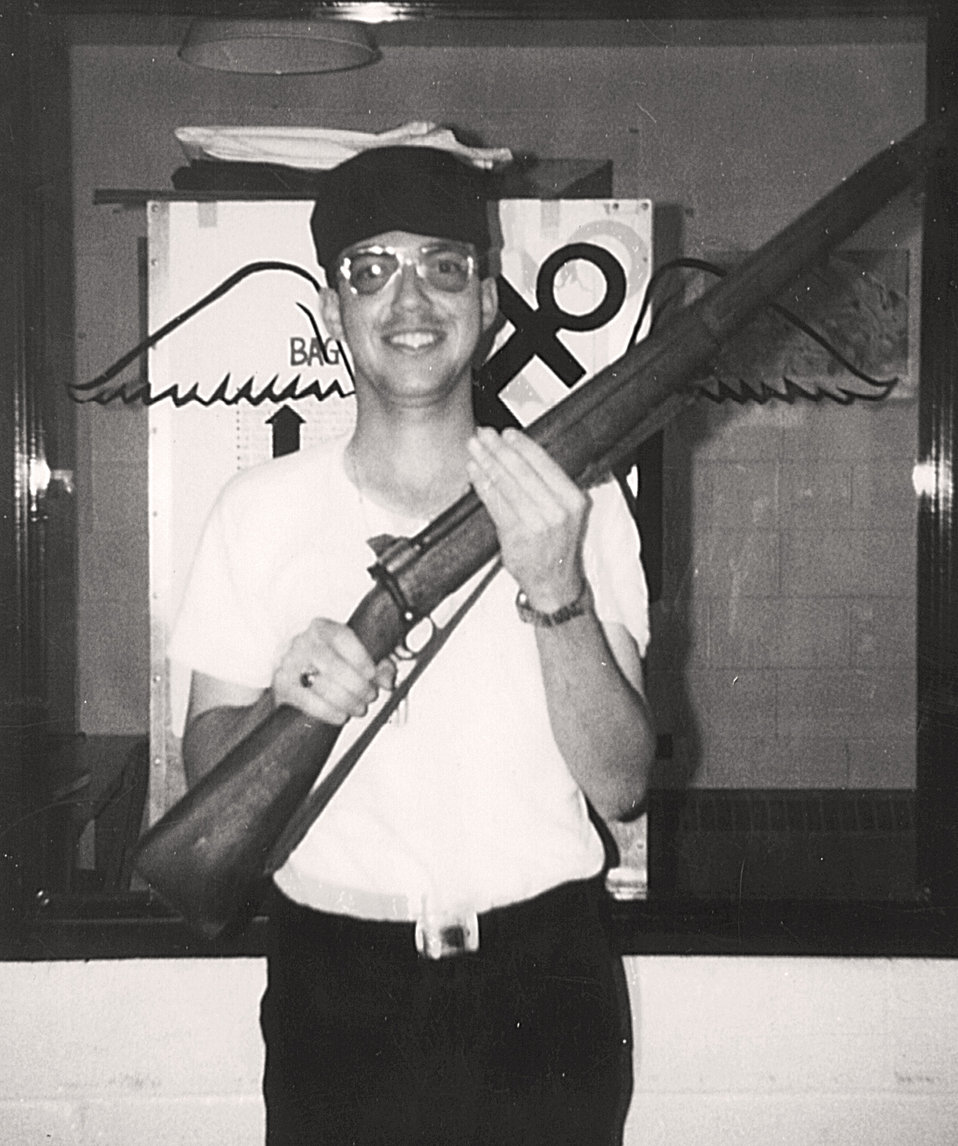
Chuck Underwood, a Public Affairs Officer in the North Florida Field Office entered the U.S. Navy in May 1973. During his military career was assigned to units in Japan, Guam, Republic of the Philippines, Georgia and Florida. Underwood also performed special assignments or visited ports in Korea, Hong Kong, Singapore, Thailand, Vietnam, Australia, New Zealand, Kenya, Spain, France, Italy, Greece, Turkey, Israel, Egypt, and numerous Marianas Trust Territory islands. He retired from the Navy as a Senior Chief Journalist (E8) in November 1993.